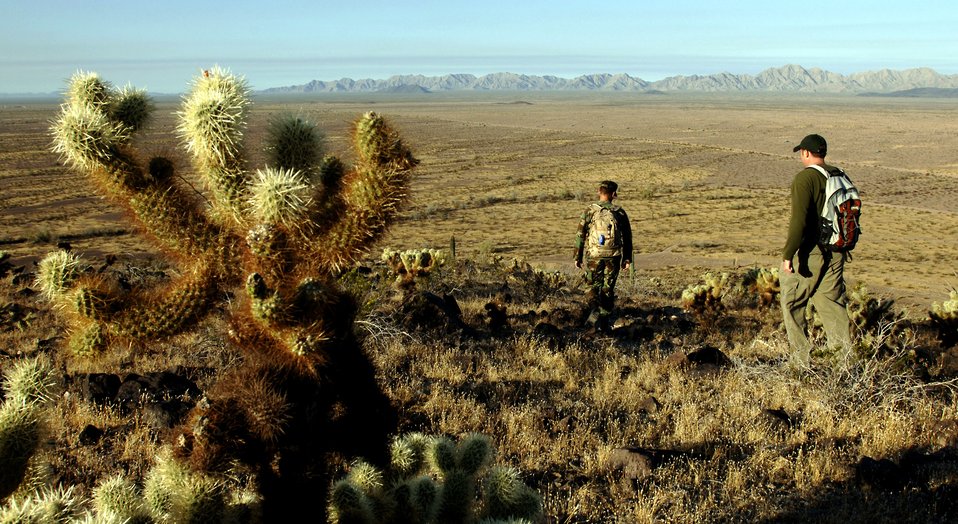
Wildlife monitors help protect endangered species

Maj. Daniel Garcia and J.T. Hesse navigate a rocky path on a hill at the Barry M. Goldwater Range in Phoenix, Ariz., where they supervise pronghorn monitoring. Once no sign of the antelope is found, mission bombings and strafing can continue on the range. Mr. Hesse is the wildlife biologist and Major Garcia is the chief of environmental science at the 56th Range Management Office.